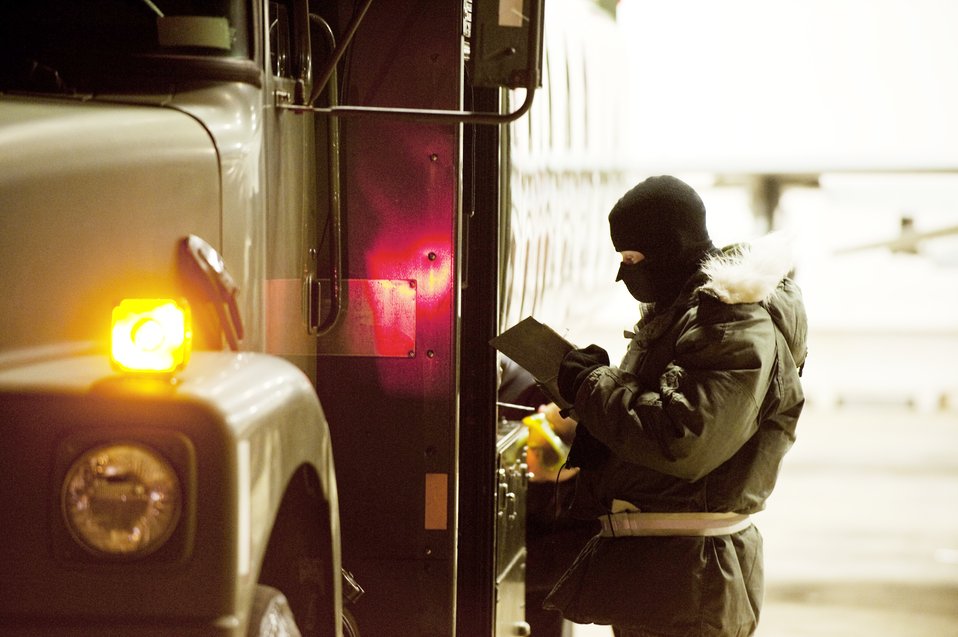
Fuels on a freezing day at Misawa

Airman 1st Class Preston Sowers, 35th Logistics Readiness Squadron refueling unit operator, fills out paperwork while refueling an F-16 Fighting Falcon inside a hardened aircraft shelter Jan. 19, 2010, at Misawa Air Base, Japan. Airmen maintain detailed records to account for distributed fuel.